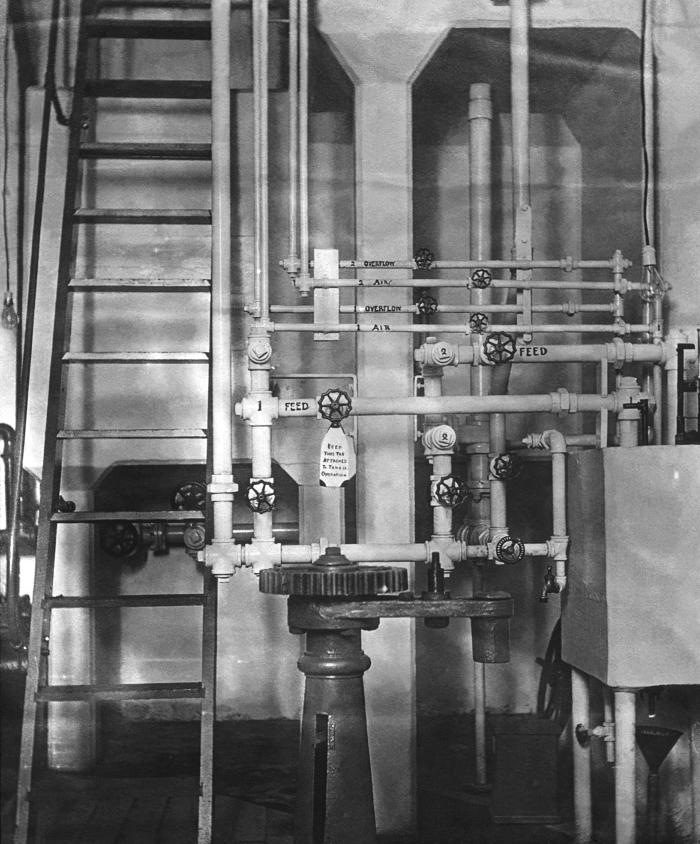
This historic 1913 photograph depicted the interior of a hypochlorite plant located in Duluth, Minnesota. The image revealed some of the details of the piping and the control box machinery inside the facility. The device was an integral component of the city's water filtration system.